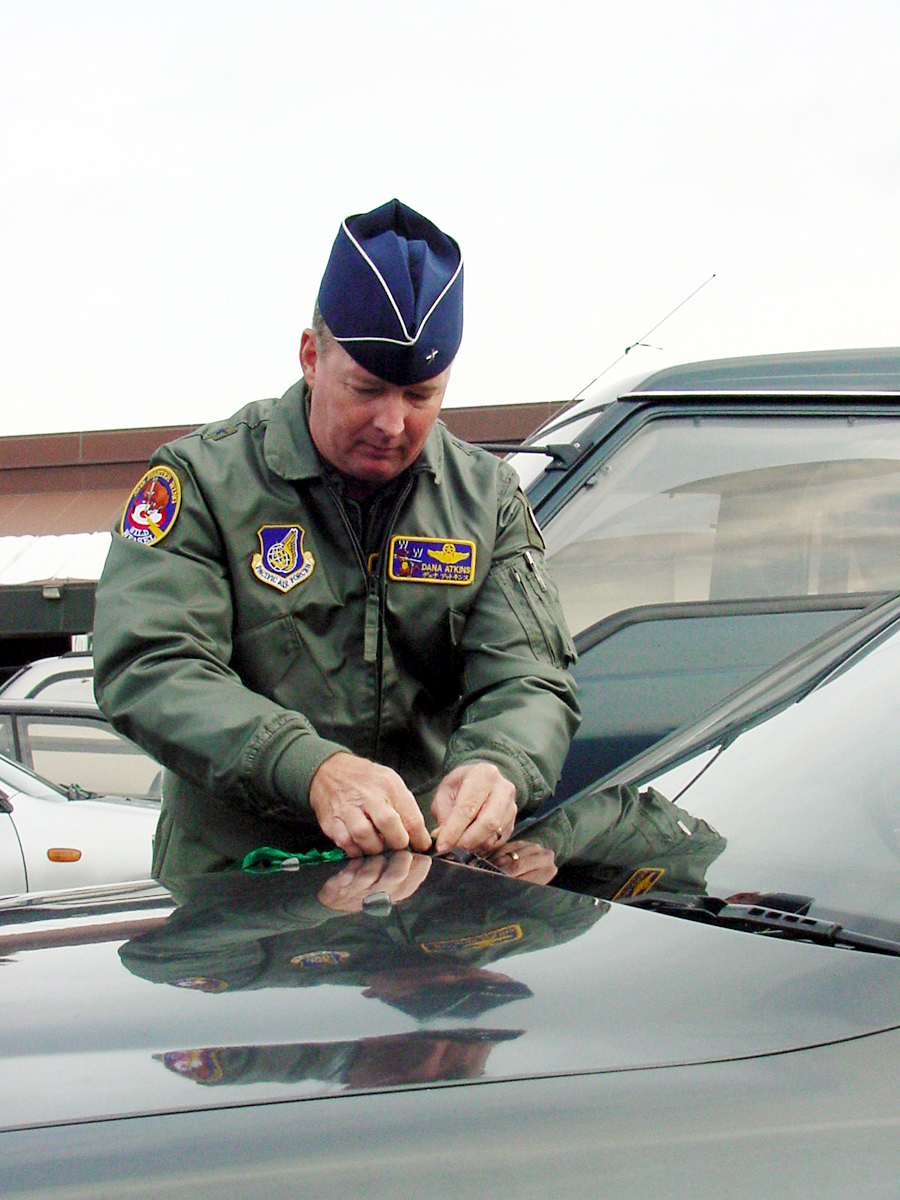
Tie one on

MISAWA AIR BASE, Japan -- Brig. Gen. Dana T. Atkins ties a green ribbon onto a car's windshield wiper here Dec. 5. The ribbons are part of the base's